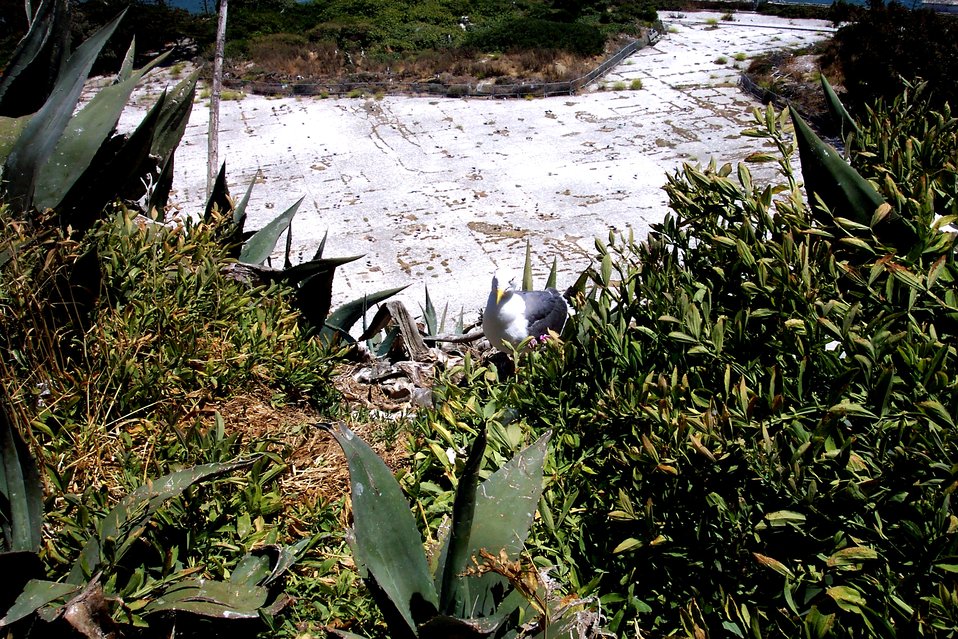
A Western Gull finds a perch in an Alcatraz garden near the warden's home.